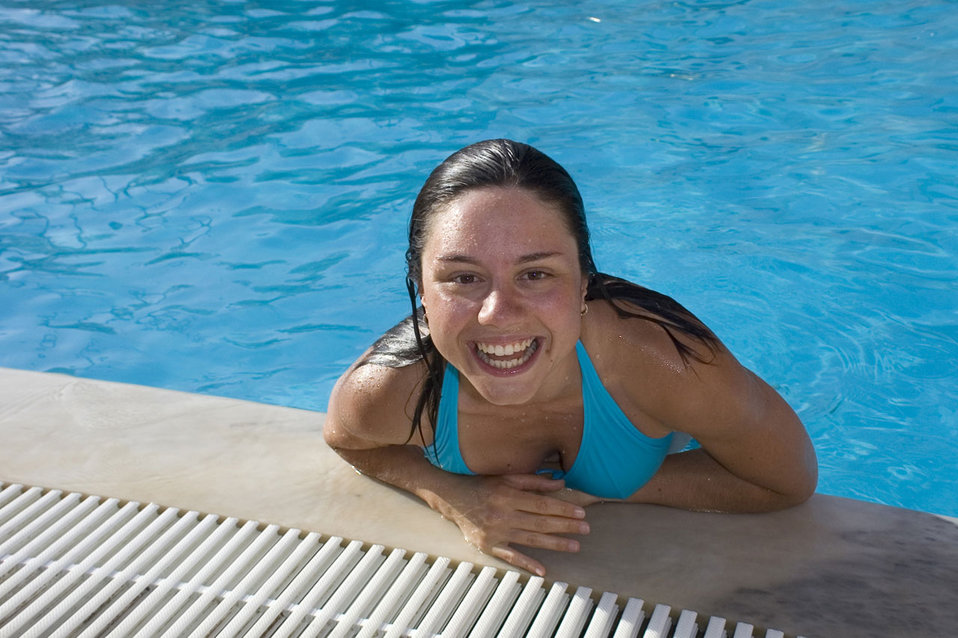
Young woman in pool

Young woman having fun in pool.